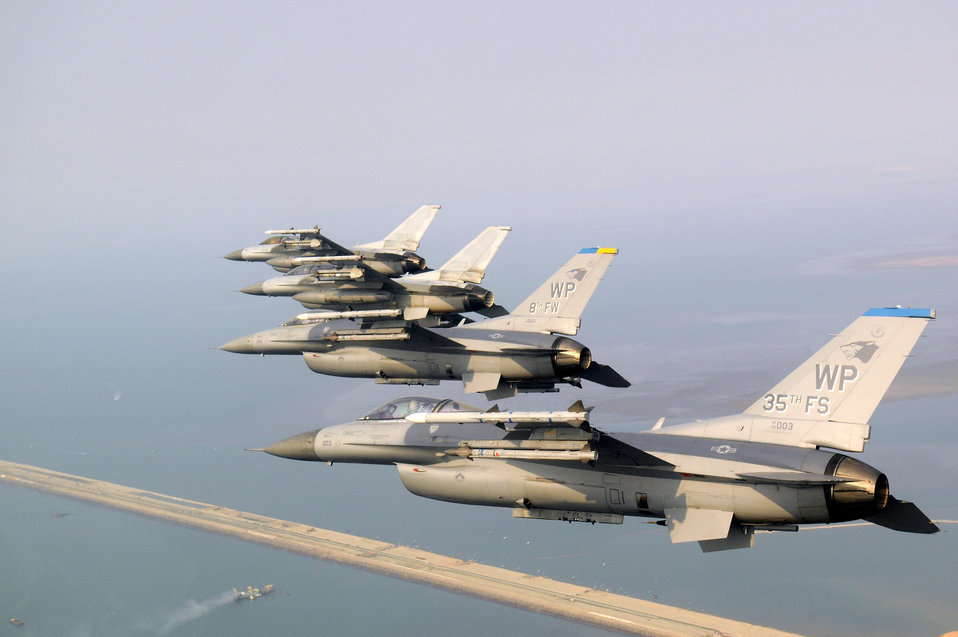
Korean War anniversary

Four F-16 Fighting Falcons fly during a U.S. and South Korean air force coalition flight Nov. 10, 2010, over the Saemangeum Seawall during a U.S. and South Korean air force coalition flight in celebration of the 60th anniversary of the Korean War.